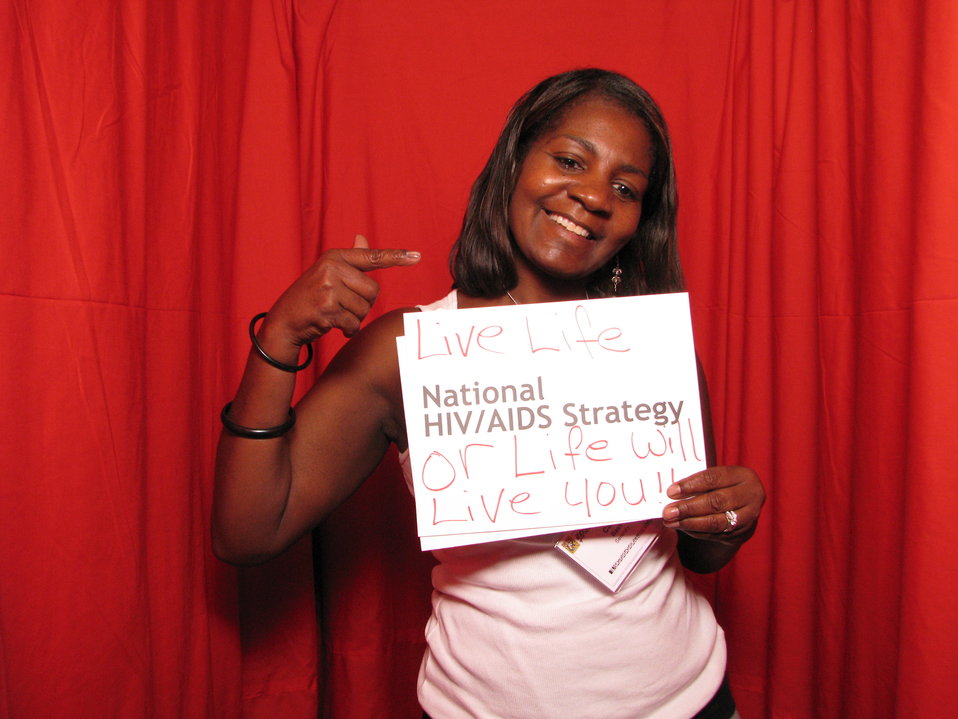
National HIV/AIDS Strategy Live Life or Life will Live You!!

From the AIDS.gov photo booth at the U.S. Conference on AIDS, September 2010 (Orlando, FL).